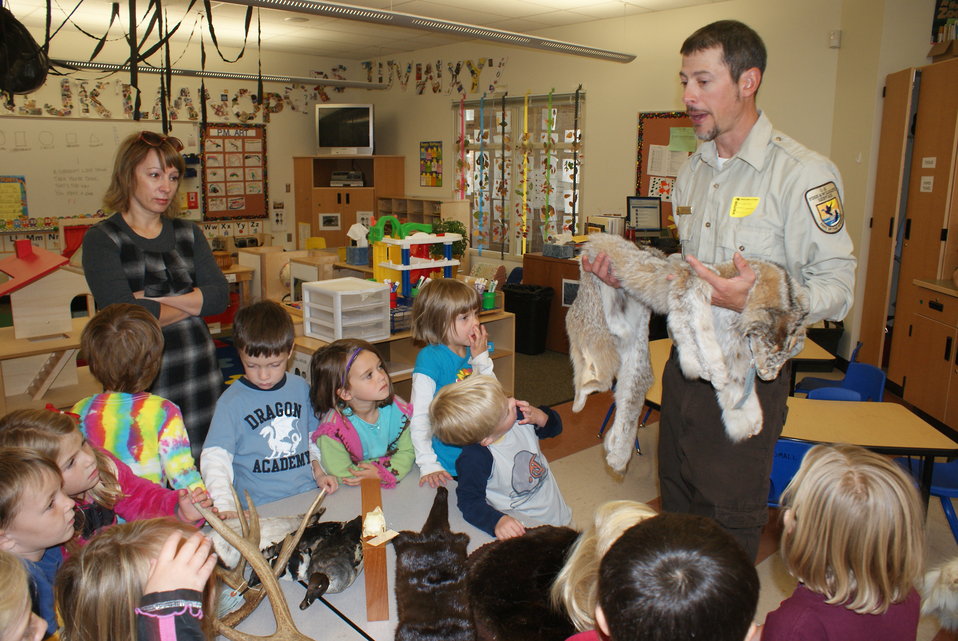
Scientists in the Community Program

U.S. Fish and Wildlife Service Mountain-Prairie Region Deputy ARD for External Affairs, Matt Kales, introduces early childhood education students at William Roberts Elementary School in Denver to some of Colorado's native and historic wildlife species.